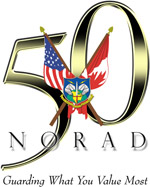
NORAD officials celebrate 50th anniversary

North American Aerospace Defense Command officials celebrated their 50th anniversary May 12 and will a NORAD time capsule, embedded in a rock that came from Cheyenne Mountain, will be unveiled May 13 followed by a ribbon-cutting ceremony for the new NORAD and U.S. Northern Command Command Center, which is located in the headquarters building at Peterson Air Force Base, Colo.